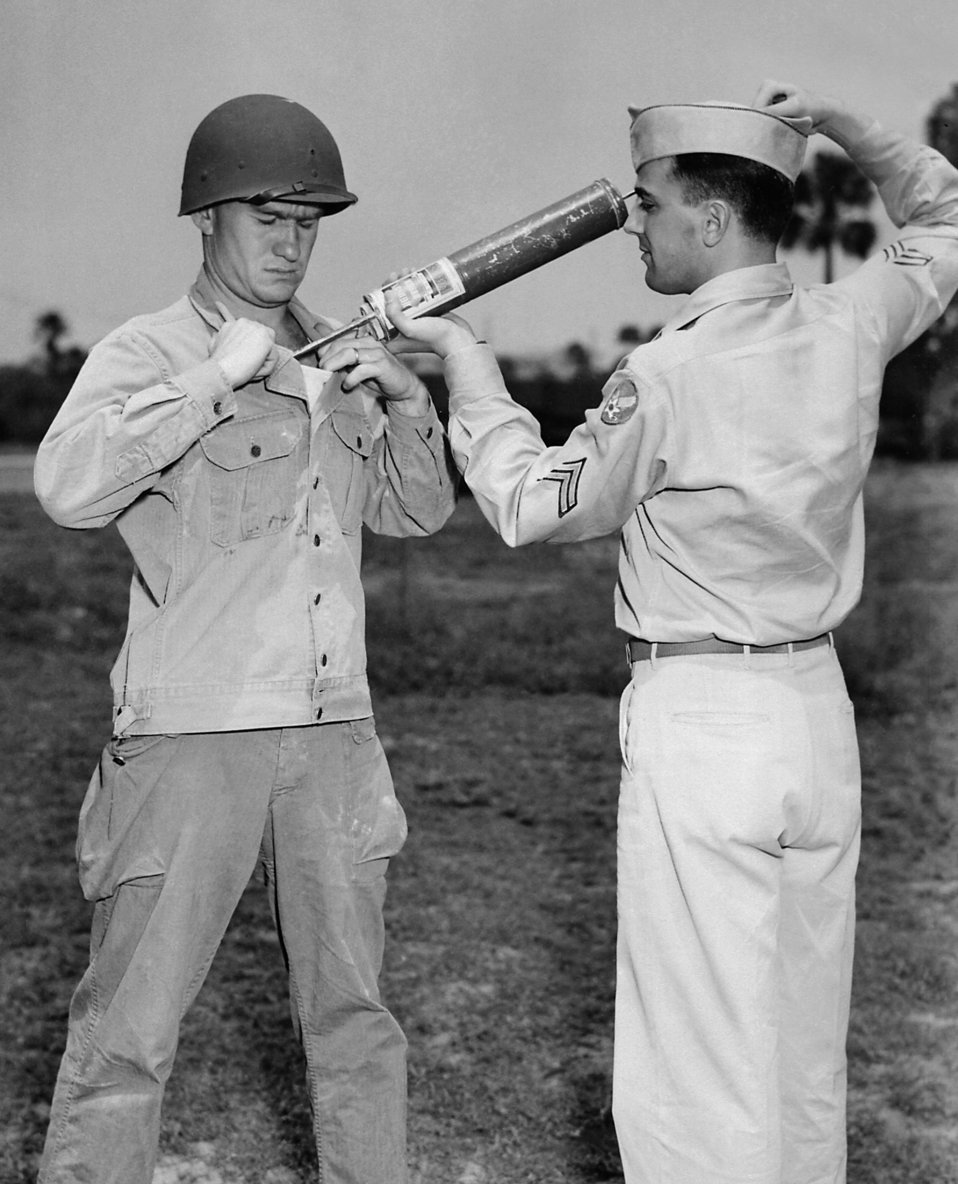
A U.S. soldier is demonstrating DDT-hand spraying equipment while applying the insecticide.